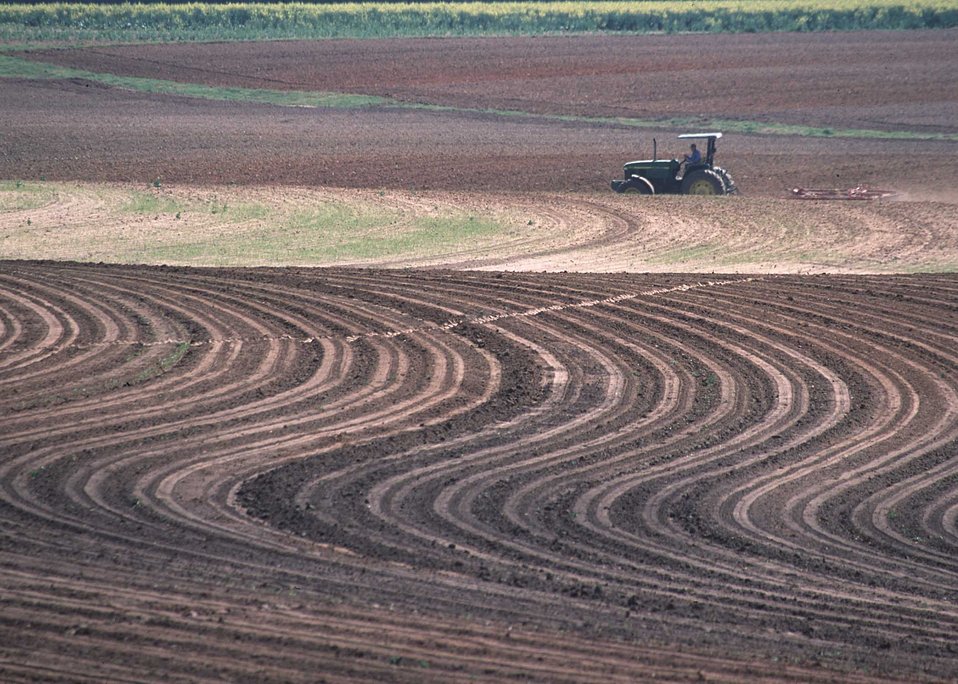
Contour farming and terraces, Tombs, County, Georgia.